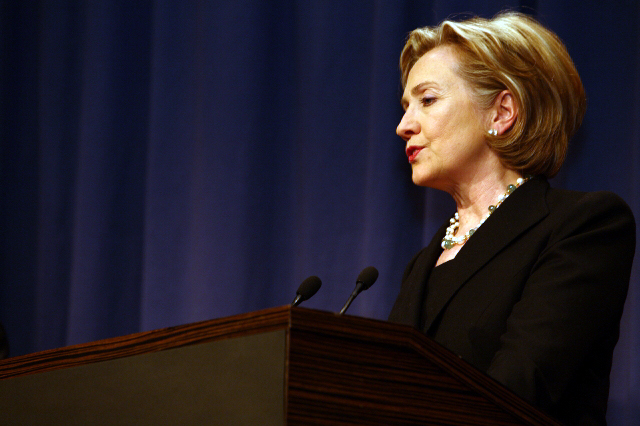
Press Conference With Russian Foreign Minister

Press conference after dinner meeting between U.S. Secretary of State Hillary Rodham Clinton and Russian Foreign Minister Sergey Lavrov in Geneva, Switzerland March 6, 2009.